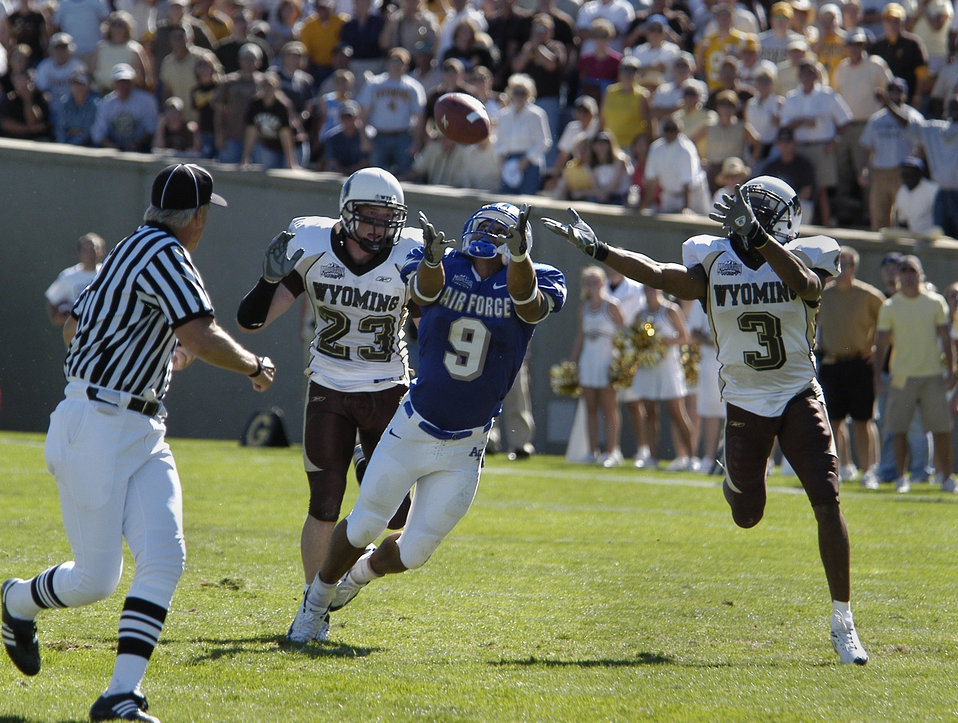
U.S. AIR FORCE ACADEMY, Colo. -- Air Force wide receiver Jason Brown reaches in vain for a pass between University of Wyoming free safety John Wendling, 23, and cornerback Terrance Butler, 3, during the Falcons last ditch drive here Sept. 17. The Cowboys went on to edge the Falcons 29-28.